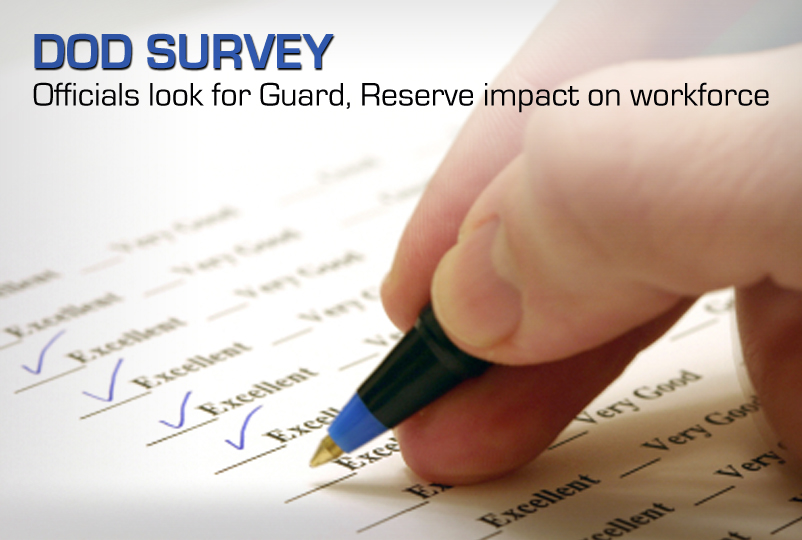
DOD Survey